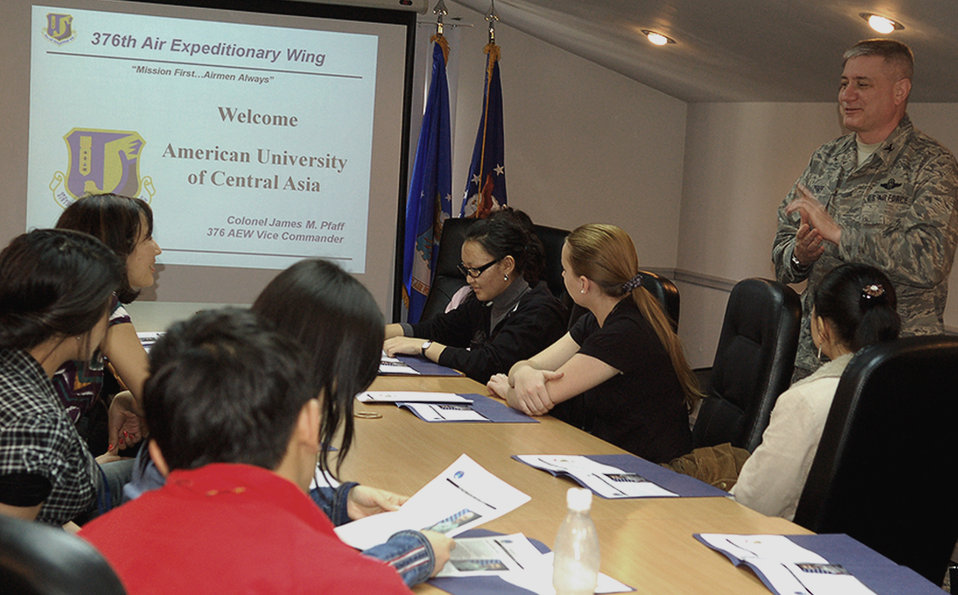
Kyrgyz students get insiders' glimpse of Manas mission

Colonel James Pfaff gives a mission briefing March 26 to 13 students and faculty members from the American University of Central Asia who visited Manas Air Base, Kyrgyzstan. The visit provided the students a look at the missions carried out daily in support of operations in Afghanistan, while building friendships with coalition personnel deployed here. Colonel Pfaff is the the 376th Air Expeditionary Wing vice commander.